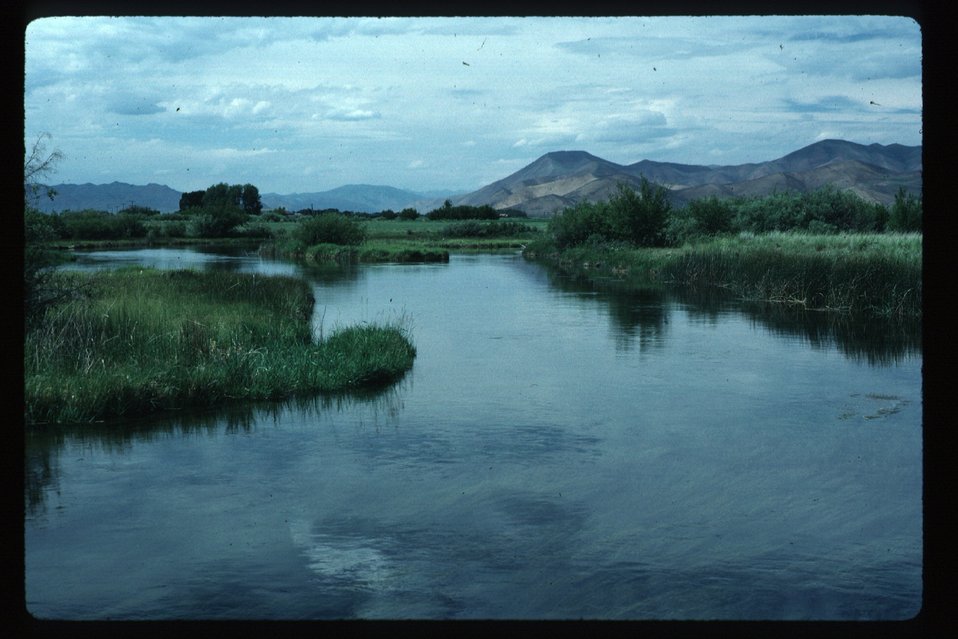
Silver Creek Riparian Shoshone Field Office